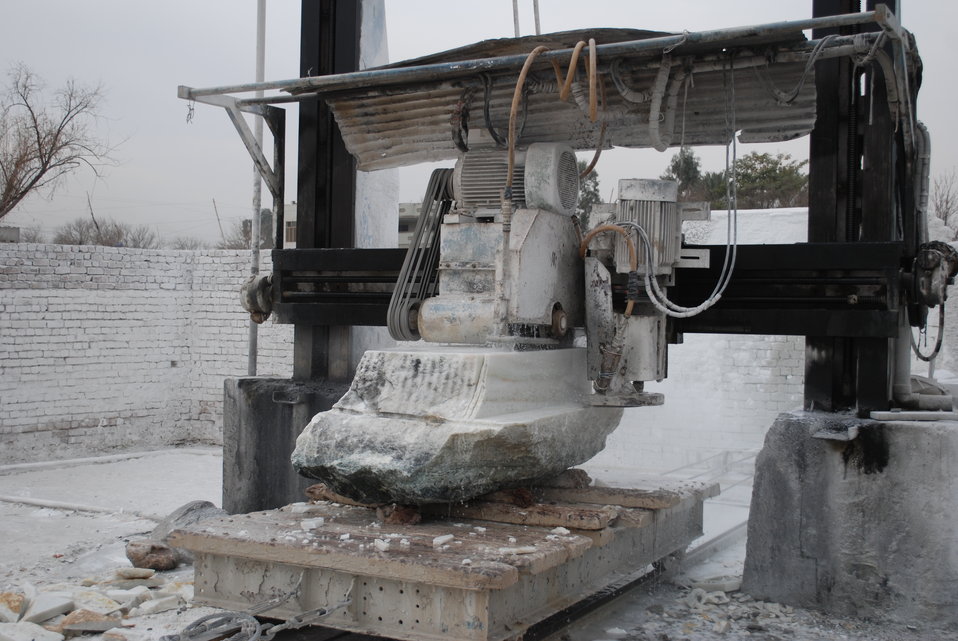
'On the Road' in Nangarhar Province